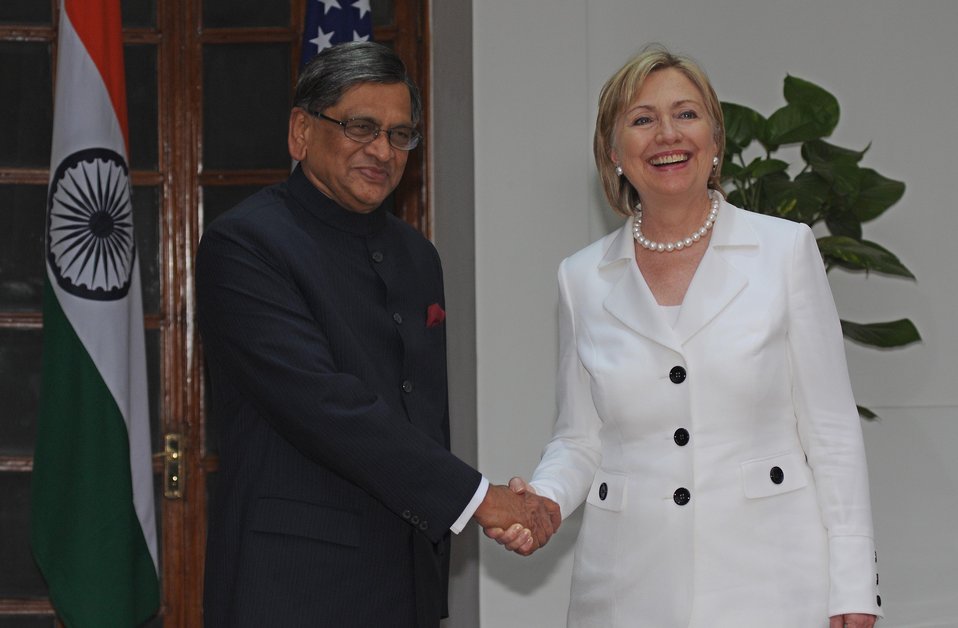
U.S., India Sign Bilateral Science and Technology Endowment Agreement

U.S. Secretary of State Hillary Rodham Clinton and Indian Minister of External Affairs S.M. Krishna after signing of a U.S.-India bilateral science and technology endowment agreement in New Delhi, India July 20, 2009.